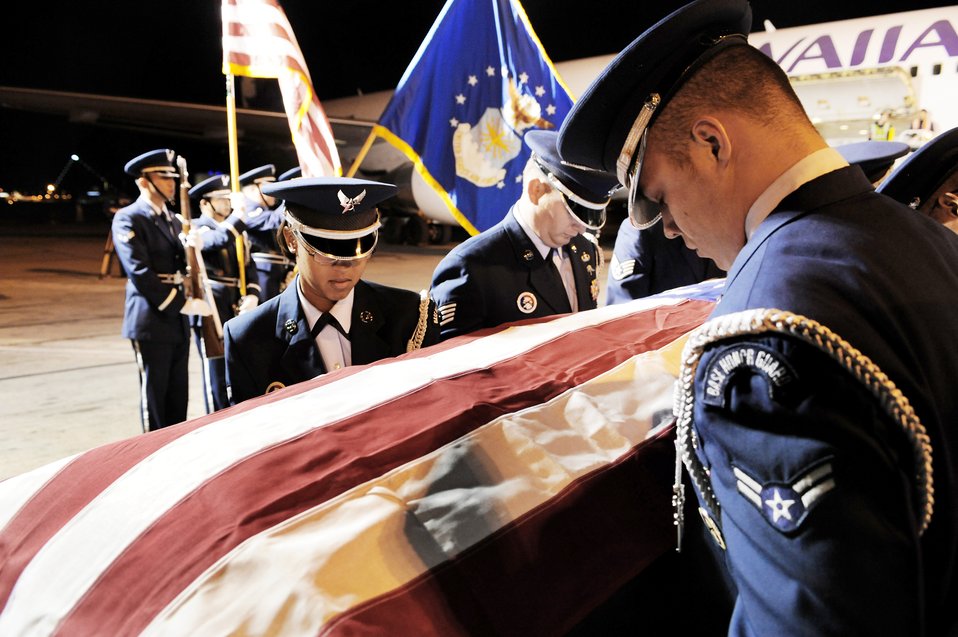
Air Force pilot missing in action from Vietnam War is identified

Members of the honor guard from Nellis Air Force Base, Nev., provide a dignified transfer of the remains of Maj. Russell C. Goodman from an aircraft to a hearse at McCarran International Airport in Las Vegas Jan. 12, 2010. Major Goodman was killed in action in Vietnam on Feb. 20, 1967, when his F-4 Phantom was shot down.